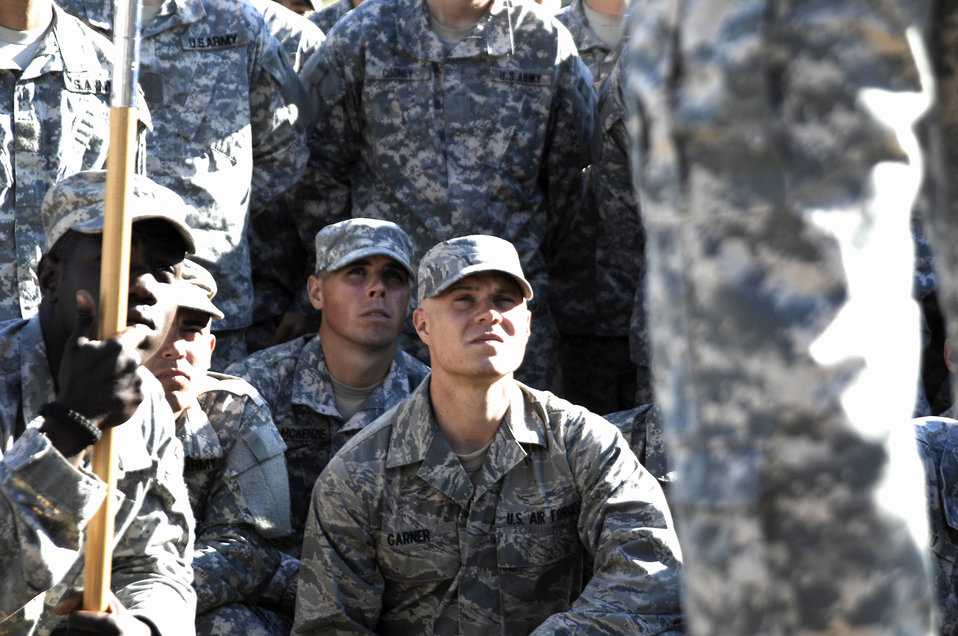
A1C Garner

Airman 1st Class Matthew Garner listens to a speech from a Ranger Training Brigade leader April 29, 2011, at Ft. Benning, Ga. The Ranger graduation ceremony was preceded by a Rangers in Action Demonstration and attended by hundreds of friends and families. Airman Garner is assigned to the 823rd Base Defense Squadron.